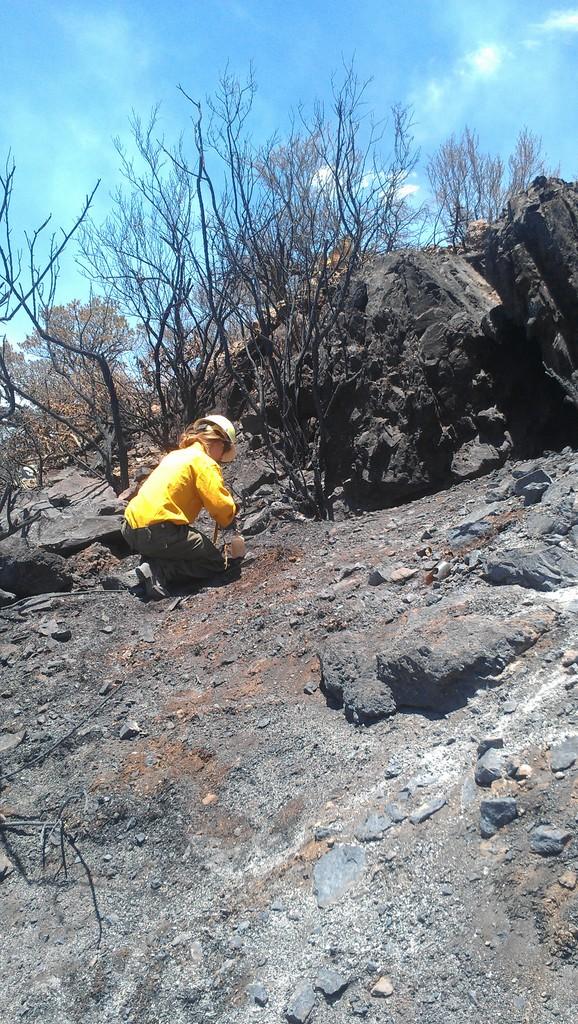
A soil scientist with the Burned Area Emergency Response (BAER) team tests for water penetration on at a high severity burn area. The Silver Post Fire response has the Burned Area Emergency Response (BAER) team beginning operations to seed acres of high burn severity and to mulch additional acres. Seeding reduces effects to downstream life, property, and infrastructure by reducing erosion and runoff. Areas of high burn severity are to be seeded with a quick germinating, non-persistent annual cereal barley that would provide rapid ground cover. A small percentage of native perennial species would also be included to give the burned area a jump start in natural recovery, and provide for long-term ground cover. Mulch is the most effective treatment for controlling erosion and runoff, as it provides immediate ground cover. Mulch also assists in stabilizing soil in and around these areas.